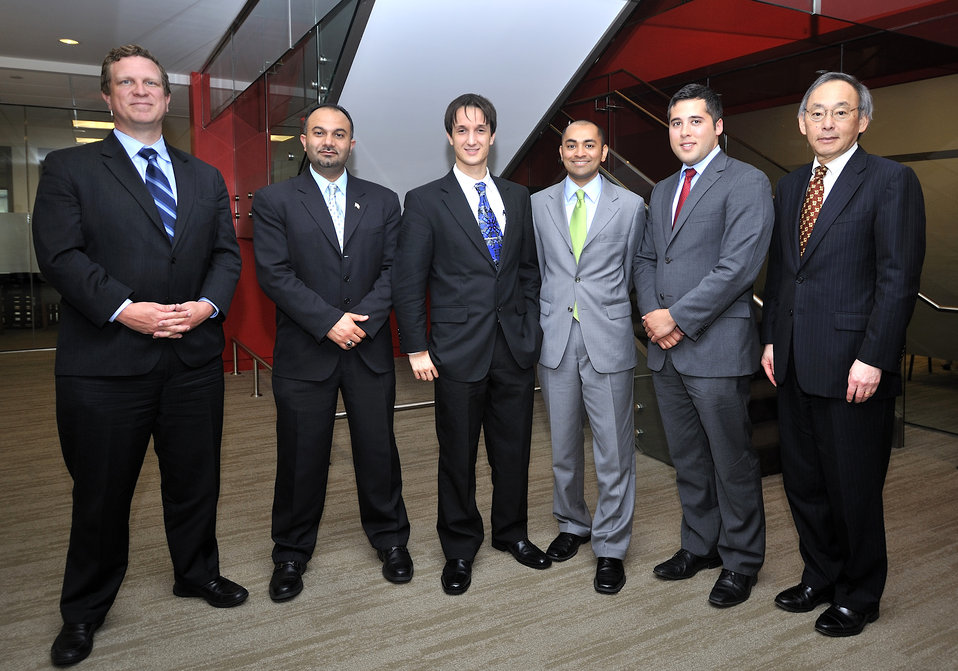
National Clean Energy Business Plan Competition

The National Clean Energy Business Plan Competition inspired nearly 300 university teams across the country to create new businesses to commercialize promising energy technologies developed at U.S. universities and the National Laboratories.